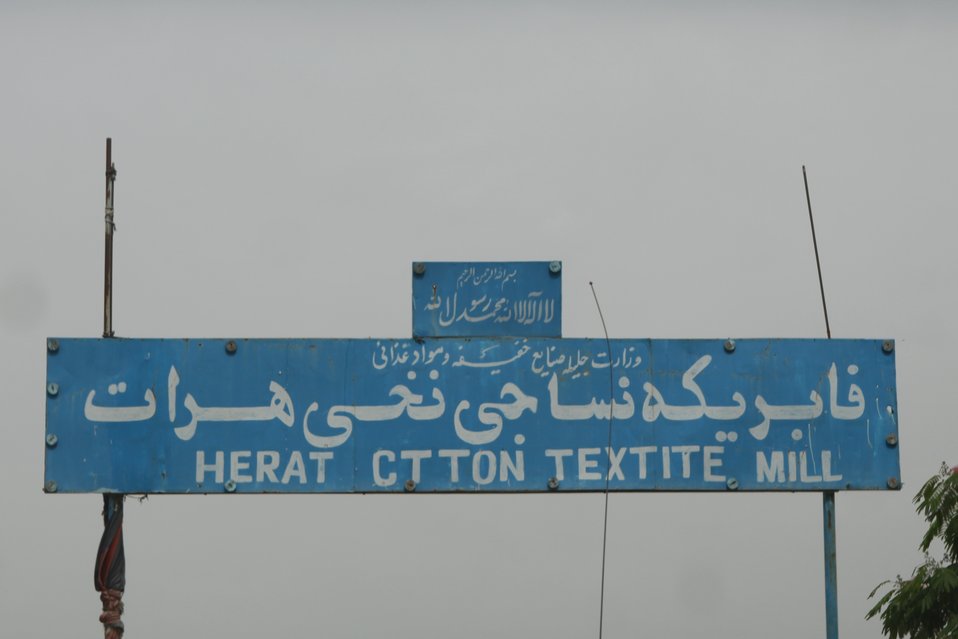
100525 Hirat Textile Company 715